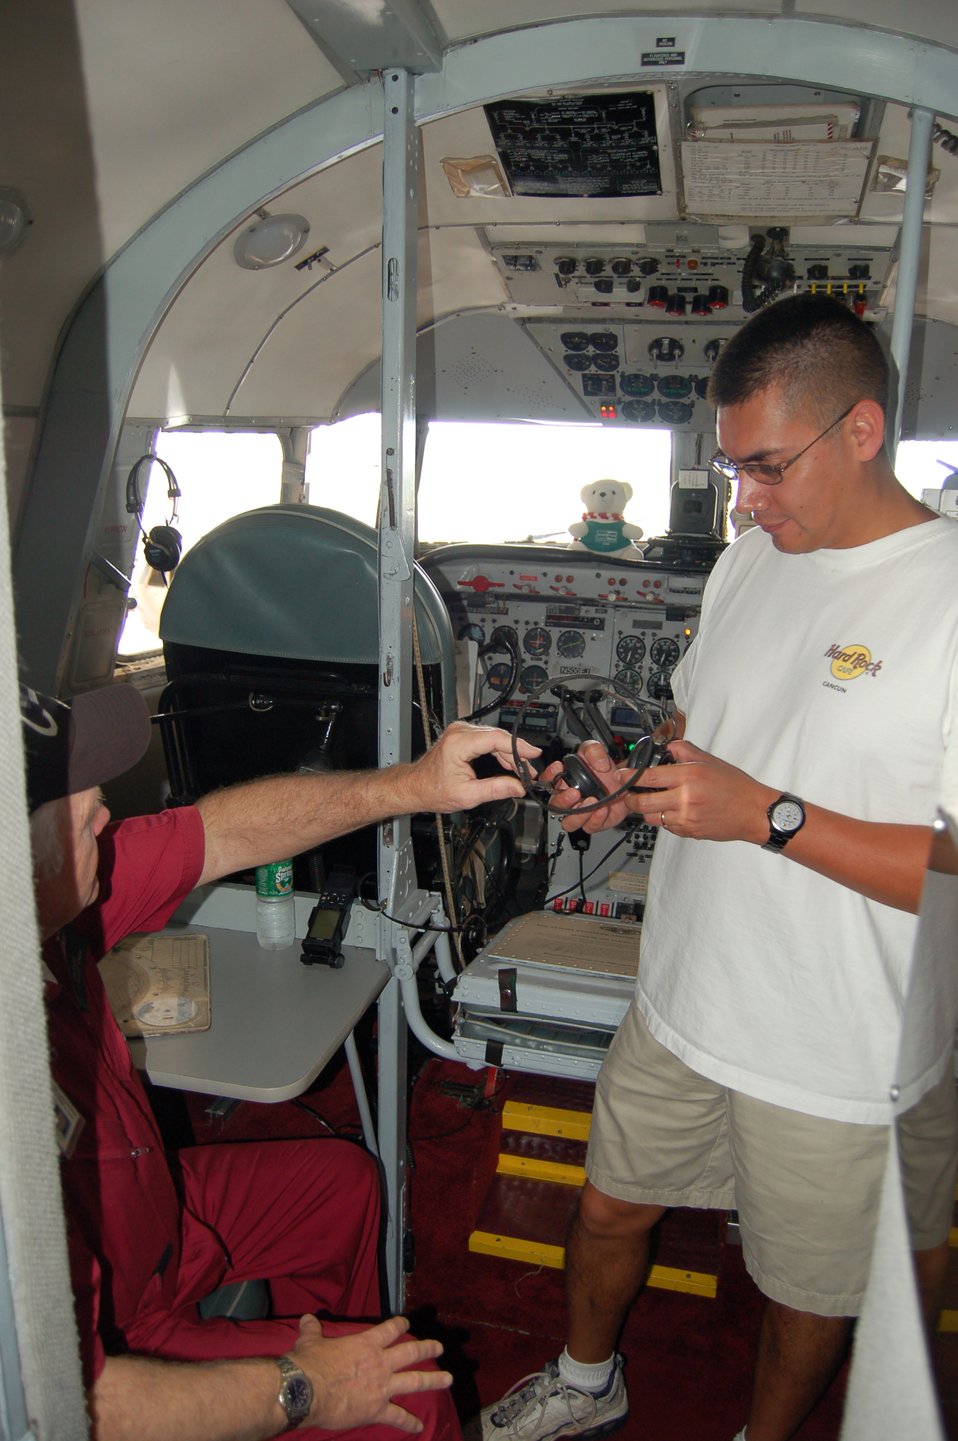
Visit

Jim Reed (left) shows Capt. David Saucedo some communications equipment in the cockpit of a C-54 during a March 22 open house at Coast Guard Air Station Borinquen, Puerto Rico. Mr. Reed is a retired technical sergeant and a C-54 flight crew member. Captain Saucedo is the assistant professor of aerospace studies at the University of Puerto Rico. Approximately 500 visitors got a firsthand look at today's military members and equipment in Puerto Rico, and to see the C-54 cargo plane used during the Berlin Airlift.